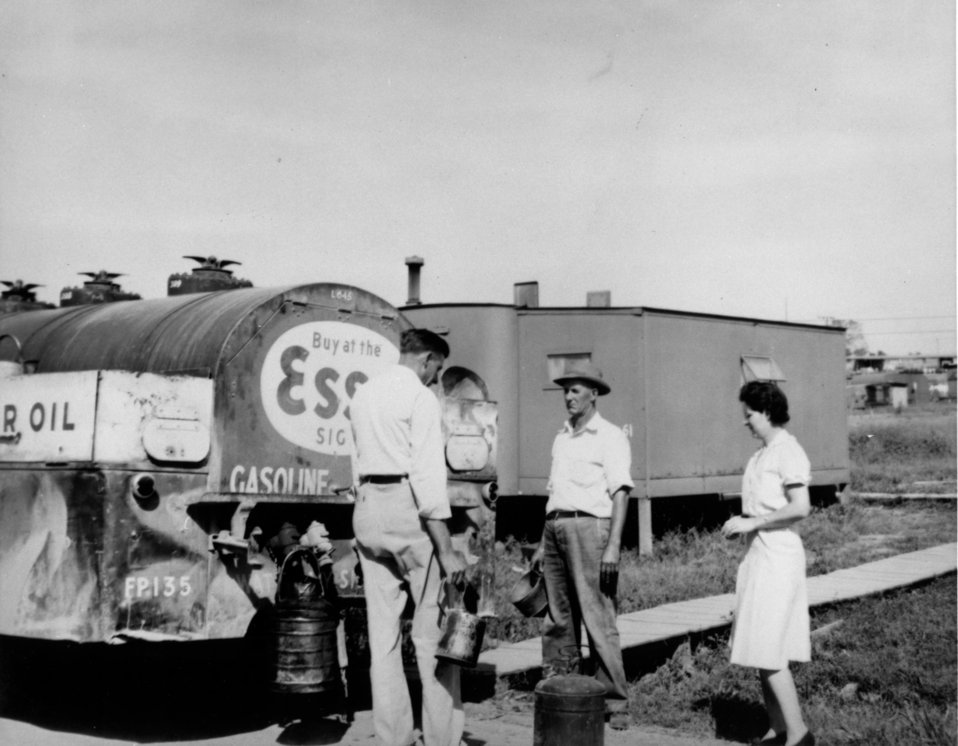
Business activity at Oak Ridge